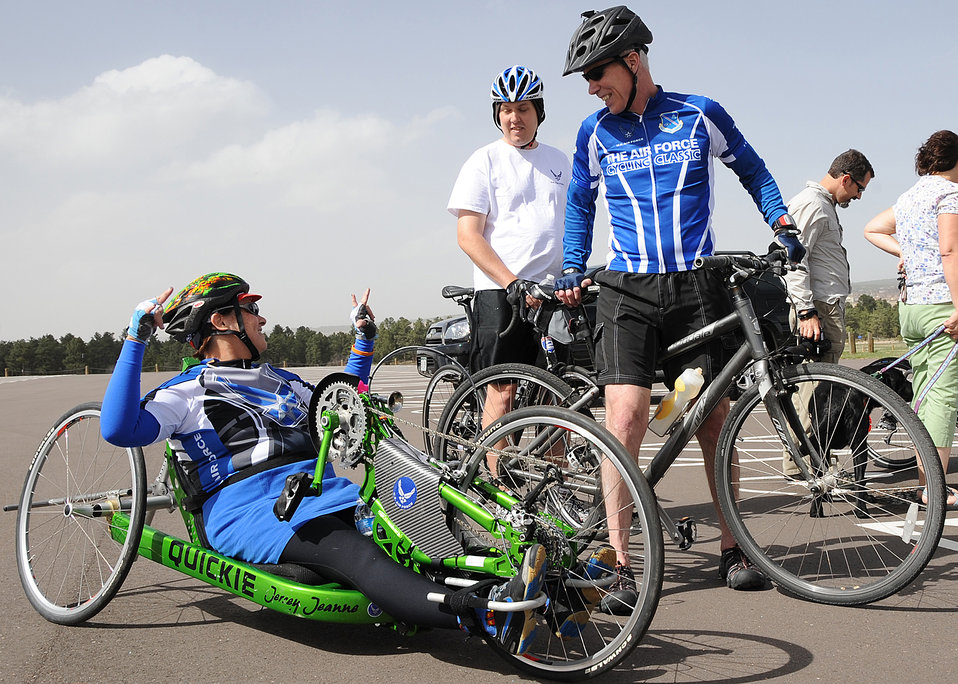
Warrior Games

Jeanne Goldy-Sanitate, a retired staff sergeant and Air Force competitor in the 2011 Warrior Games, converses with Gen. William Shelton, the Commander of Air Force Space Command, and fellow Air Force competitor retired Staff Sgt. Gregory Miller, moments after they completed a six-mile cycling course May 9, 2011, at the Air Force Academy in Colorado Springs, Colo. General Shelton spoke with the team at their morning breakfast and then joined them for the cycling practice in the afternoon.